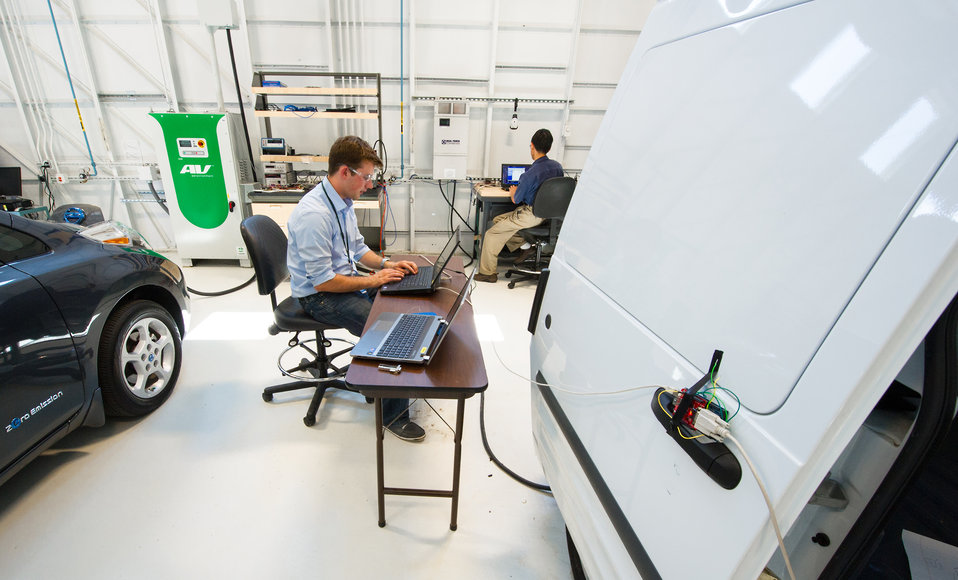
VTIF Research

July 26, 2013 - (L-R) NREL intern Josh Crowley and NREL engineer Myungsoo Jun, run an experiment at the Vehicle Testing and Integration Facility (VTIF). The experiment is attempting to maximize solar power generation for the fast charging of an electric vehicle (Gray Nissan Leaf) from a solar PV source. The battery in the Ford Transit (white van) acts as a stationary battery, simulating the utility grid load and providing additional power or storing excess power as needed to fast charge the EV.